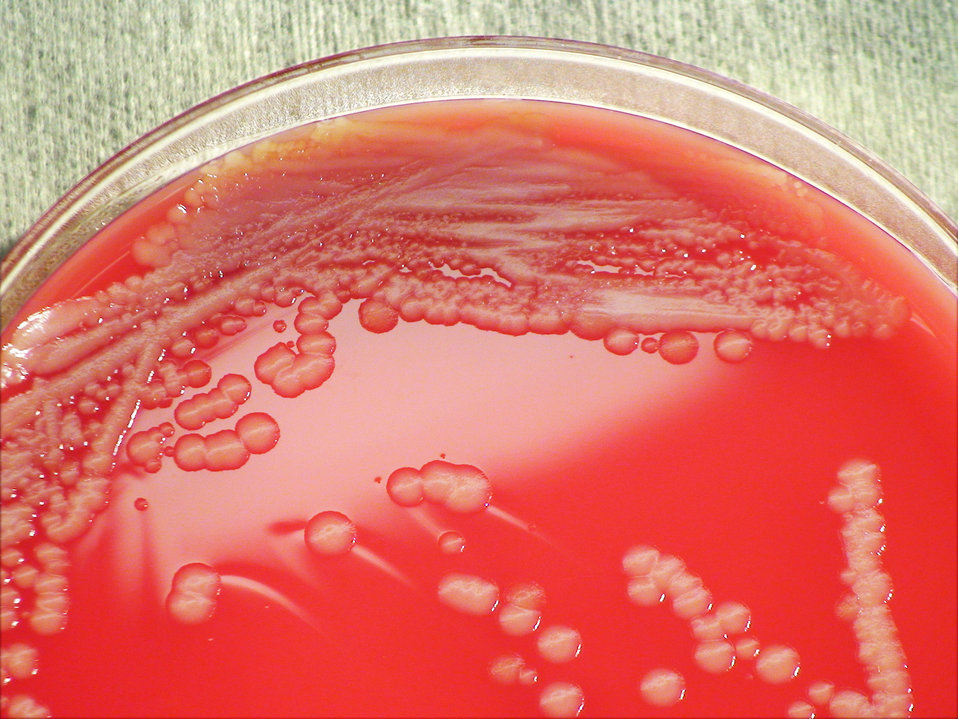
This photograph depicts the colonial morphology displayed by Gram-positive Bacillus megaterium bacteria, which was grown on a medium of sheep's blood agar (SBA), for a 24 hour time period, at a temperature of 37�C. The overall colonial morphology displayed by B. megaterium is very similar to that displayed by B. anthracis. See PHIL 12382, and 12383, for other views of this culture plate, and these bacterial colonies.